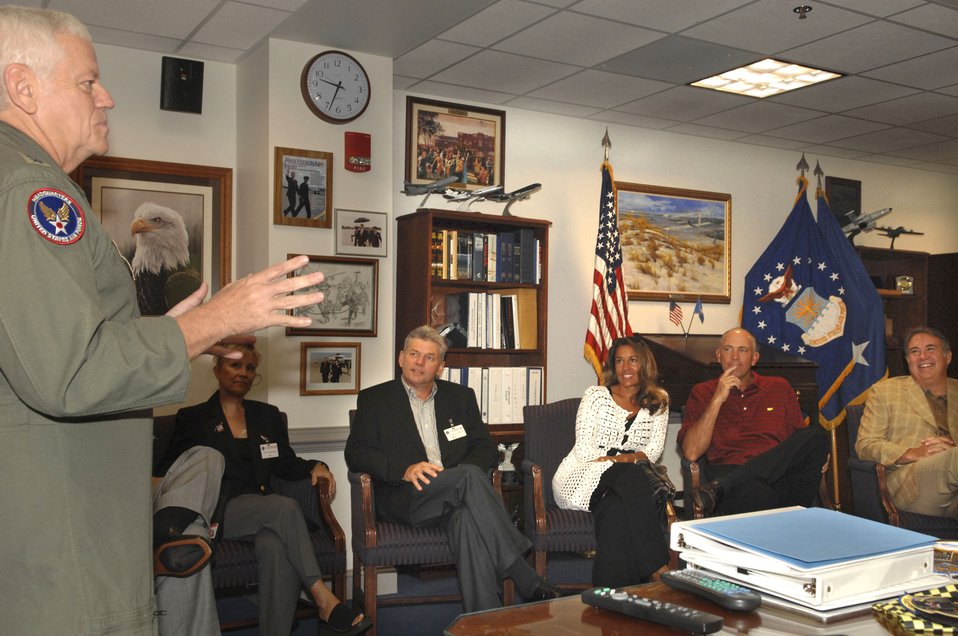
PGA champions visit Pentagon

Lt. Gen. Arthur J. Lichte briefs the U.S. Ryder Cup team and other PGA officials during their visit at the Pentagon Sept. 17. General Lichte is the assistant vice chief of staff and director, Air Force staff, Headquarters U.S. Air Force.